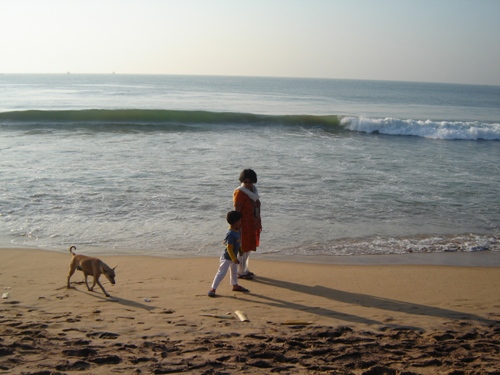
Uploaded by request of Shaswati Sengupta

Taken in Puri, orissa

'With small but firm confident steps let us all walk towards a wonderful world...... With man's best friend following behind me & my kiddy enjoying a stroll on the shore